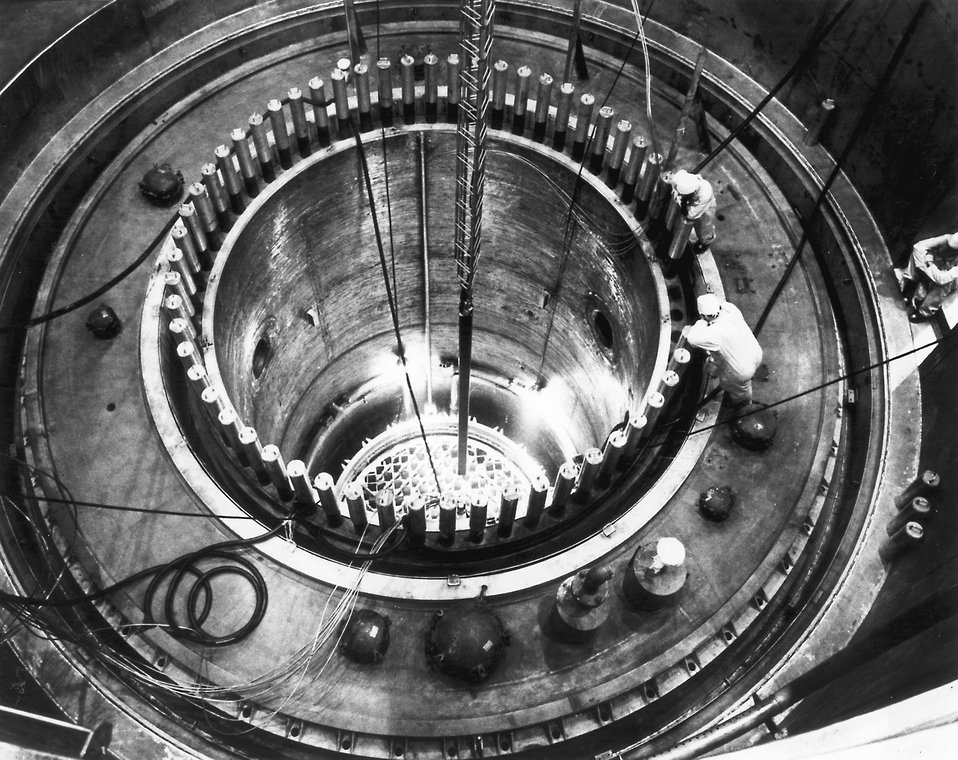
The first fuel bundle at the Duana Arnold Energy Center is lowered into its slot in the nuclear reactor February 27, 1974. Circa 1975.